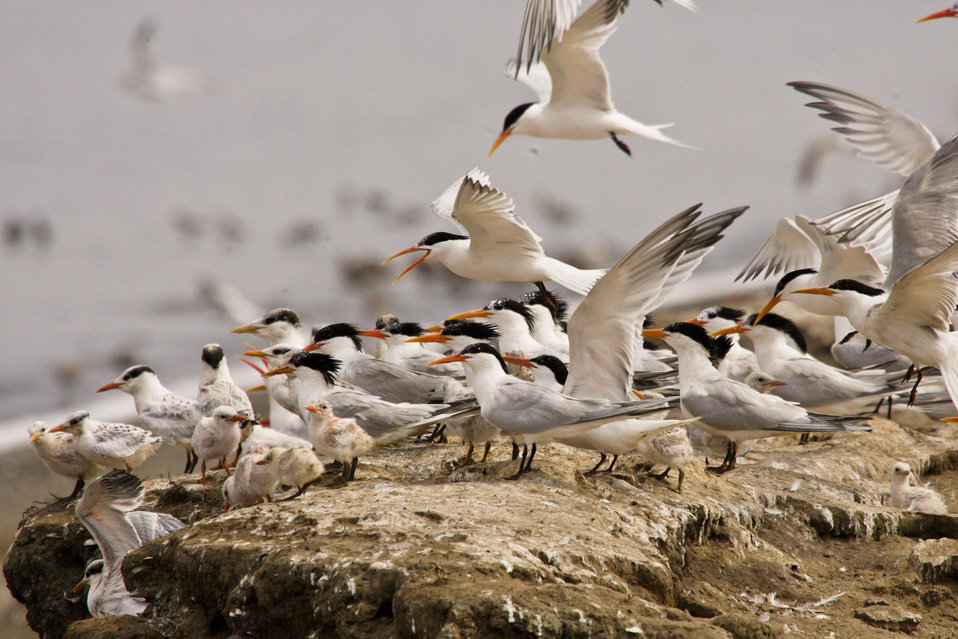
Elegant tern flock with chicks (Sterna elegans)